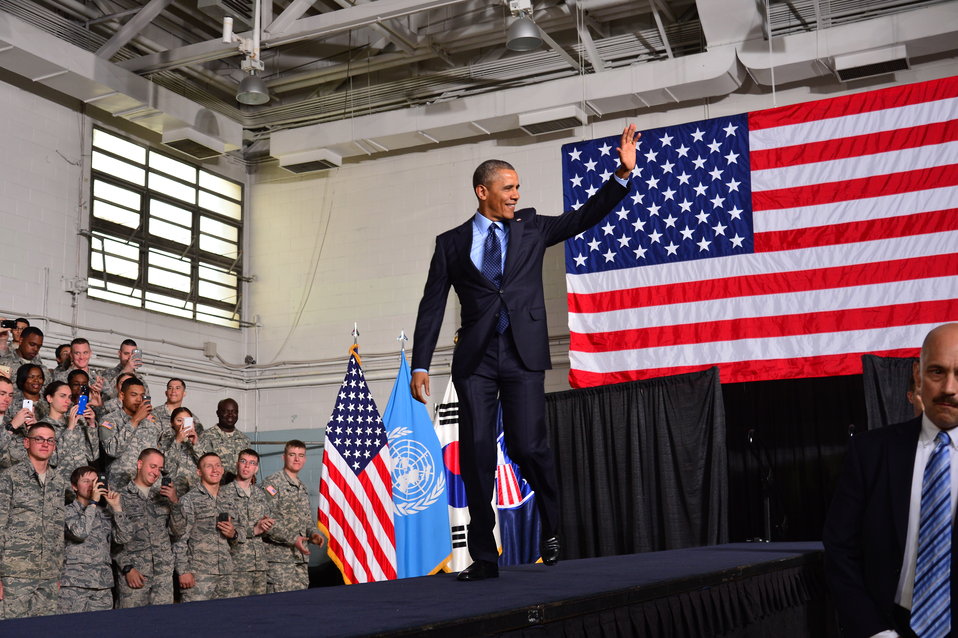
President Obama Delivers Remarks at a Combined Forces Command Briefing

President Barack Obama delivers remarks at a Combined Forces Command Briefing at Yongsan Garrison in Seoul, Republic of Korea on April 26, 2014.